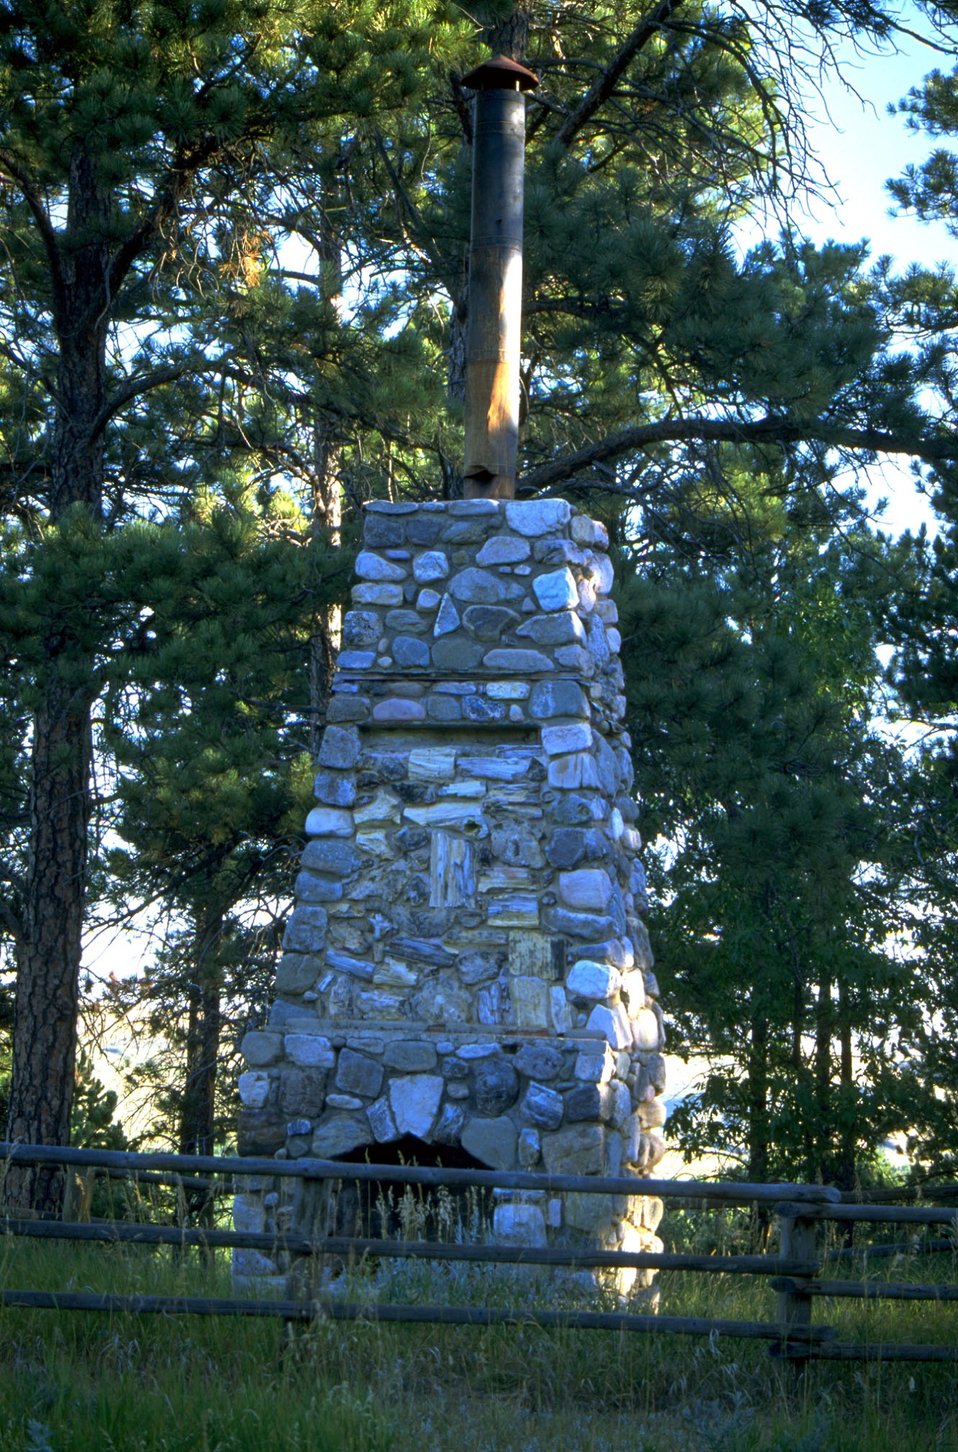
Camp Fechner, CCC Camp, Officer Quarters Chimney